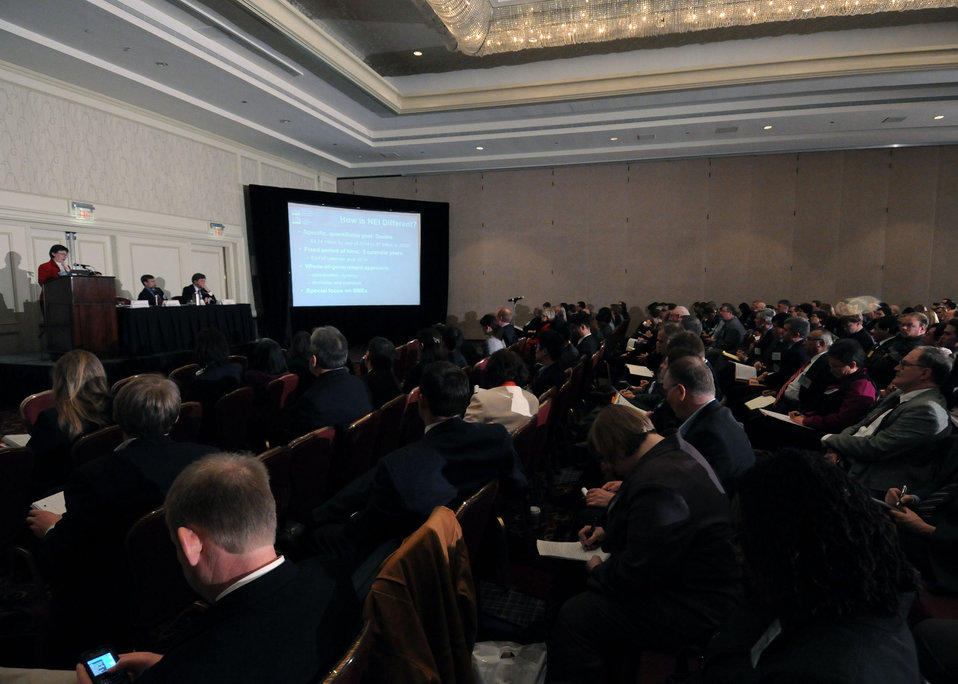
Janet Nuzum, General Sales Manager, Associate Administrator, Foreign Agriculture Service, USDA makes remarks on the Administration’s Export Goals and Impacts on U.S. Agriculture during the breakout session on Foreign Trade and the National Export Initiatives at the World Agricultural Outlook Board Forum held in Arlington, VA, on Thursday, February 24, 2011. Also, on the panel were (left to right) Moderator Robert Riemenschneider, Deputy Administrator, Office of Global Analysis, Foreign Agriculture Service, U.S. Department of Agriculture Gary Blumenthal, President and CEO, World Perspectives, Inc., and Tom Suber, President, U.S. Dairy Export Council.